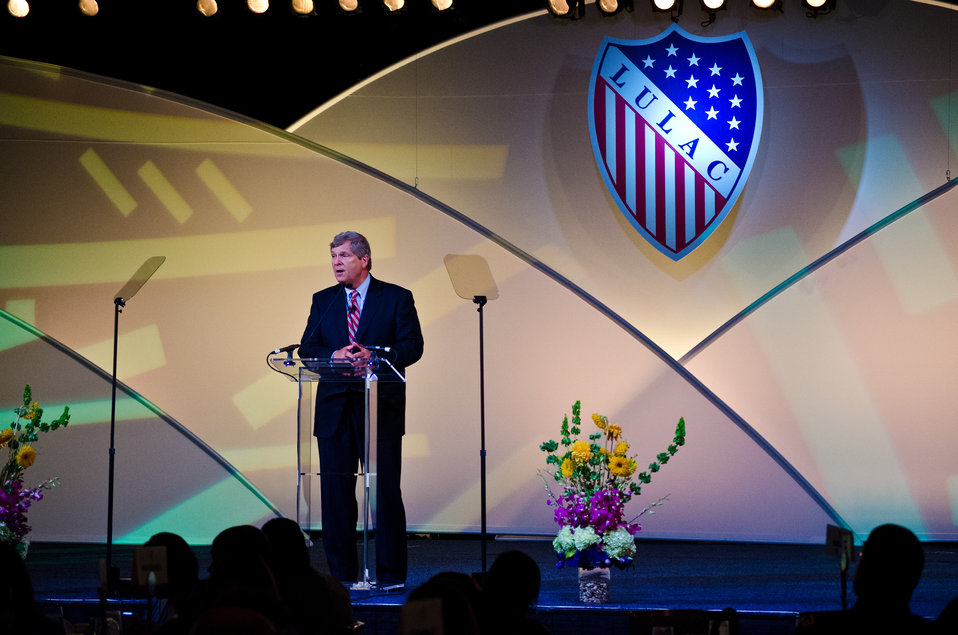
Agriculture Secretary Tom Vilsack speaks at the 84th Annual League of United Latin American Citizens (LULAC) National Convention and Exposition in Las Vegas, NV on Wednesday, Jun. 20, 2013.